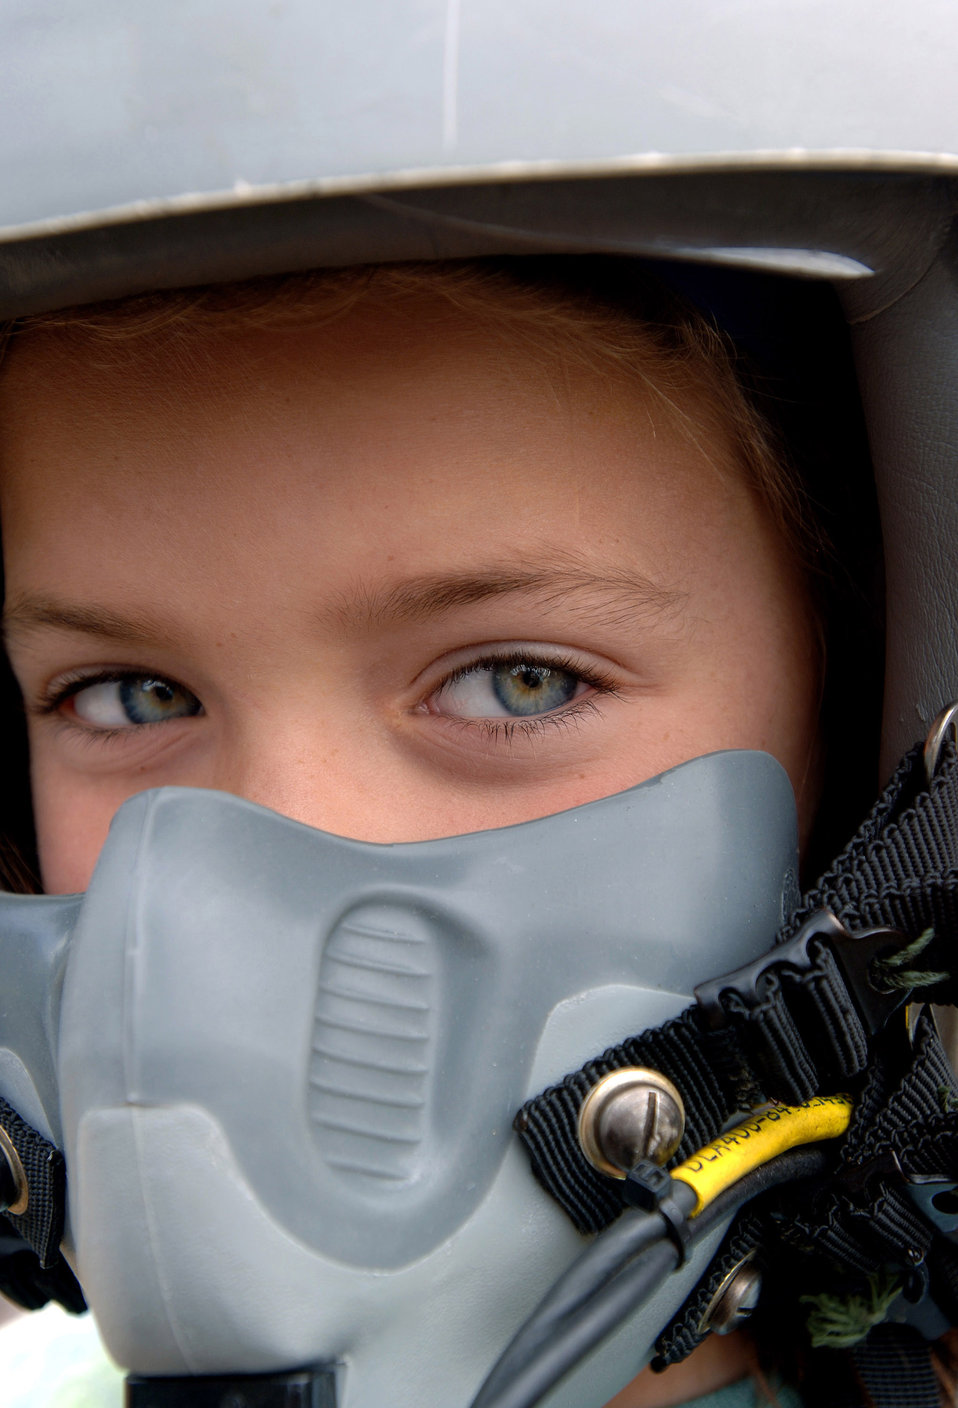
Astronaut orbits Air Force Week science day

Veronica Morrier, 8, from Concord, N.H., tries on a fighter pilot helmet during an Air Force pilot's life support survival equipment display by members of Pease Air National Guard Base from New Hampshire Aug. 21 in Concord, N.H. The Christa McAuliffe Planetarium hosted the Air Force New England Science Day, which provided children and adults hands-on displays of Air Force equipment, a model rocket launch demonstration, an F-16 Fighting Falcon static display, and